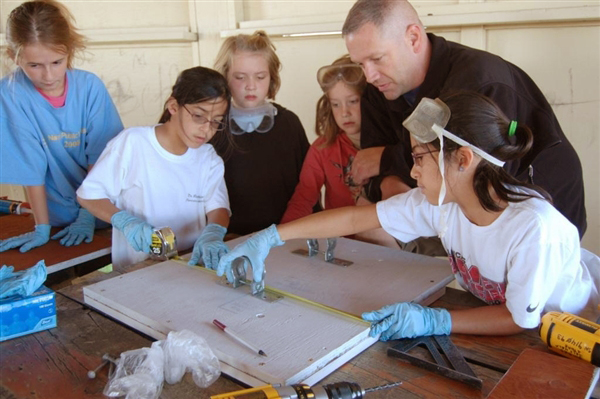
National Public Lands Day

An Airman leads children in constructing a bat box as part of volunteer conservation efforts on National Public Lands Day Sept. 25, 2009, at Malmstrom Air Force Base, Mont.